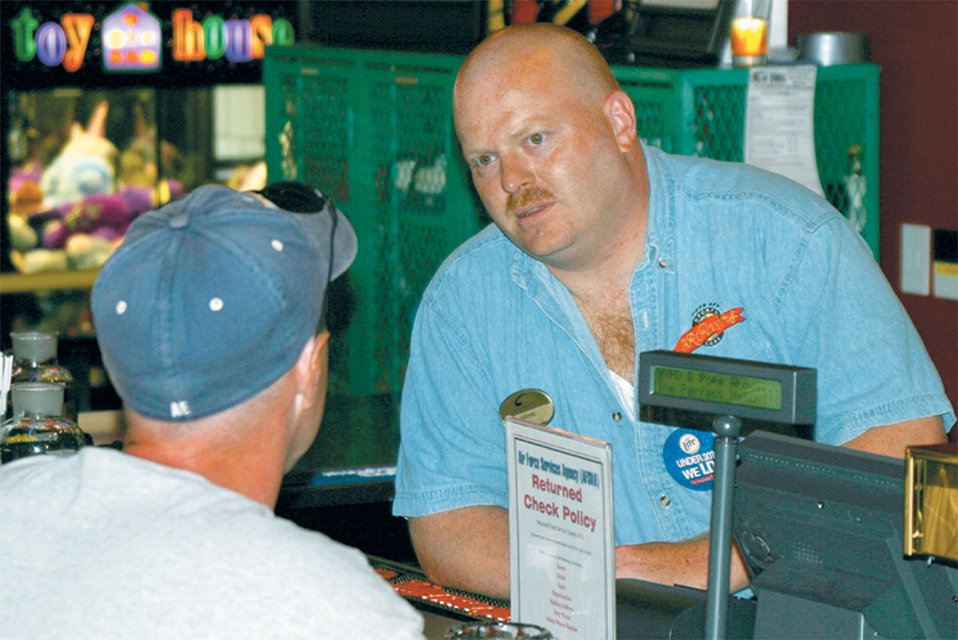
Taking action by taking keys

POPE AIR FORCE BASE, N.C. -- Talking with one of the patrons at J.R. Rocker's sports bar here, Staff Sgt. Brian Miller keeps close tabs on his customers' sobriety. He frequently suggests Airmen Against Drunk Driving as a safe option for getting home. Sergeant Miller is assigned to the 2nd Airlift Squadron.